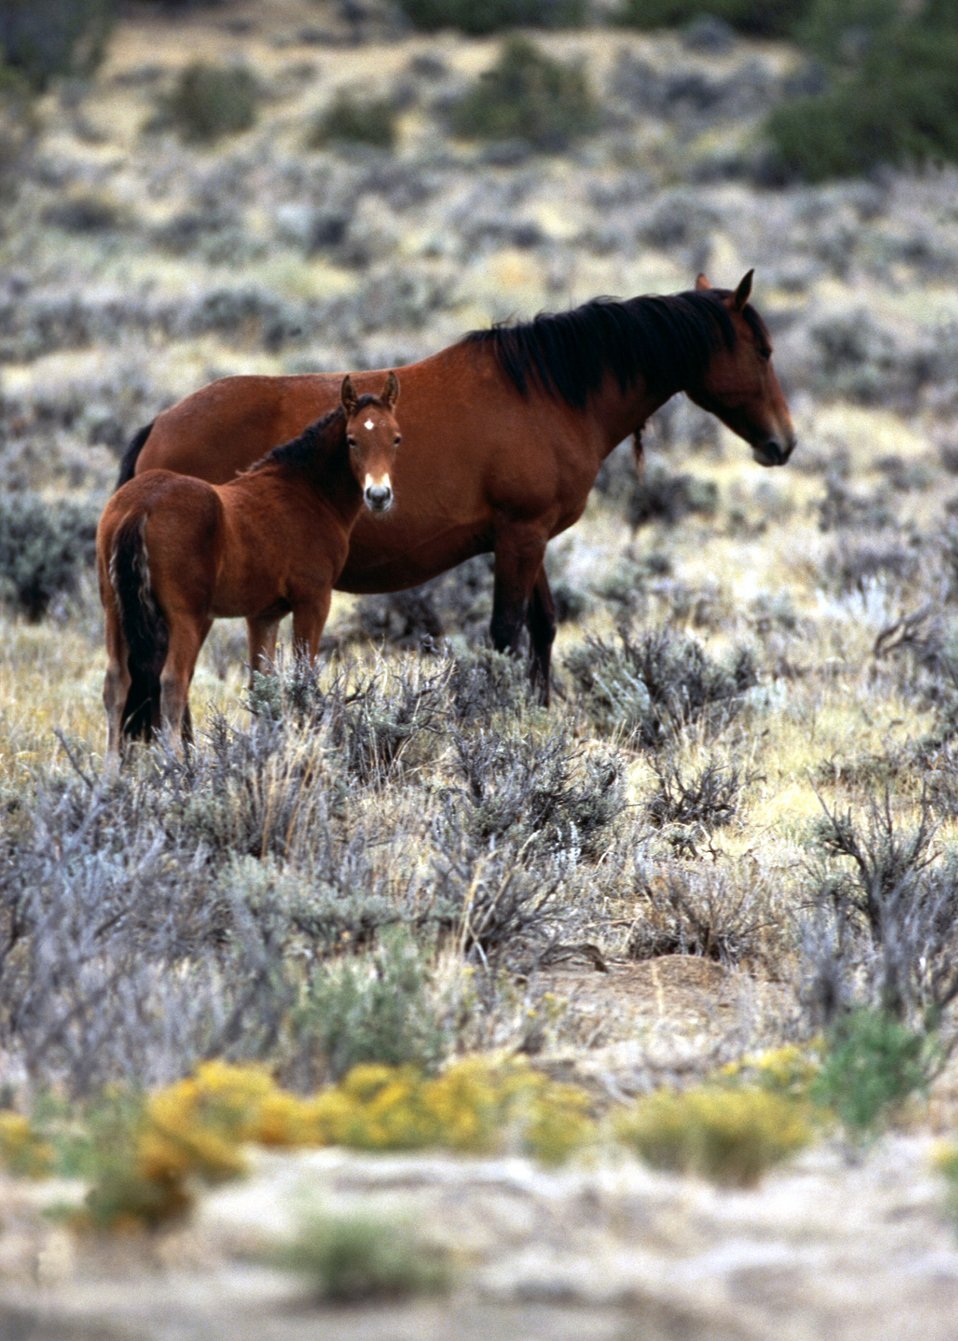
Horses